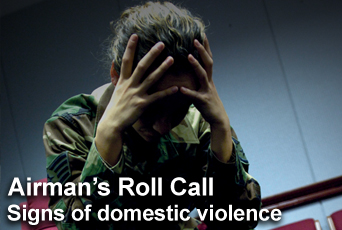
Airman's Roll Call: Signs of domestic violence

This week's Airman's Roll Call focuses on domestic violence and its effects on Airmen.